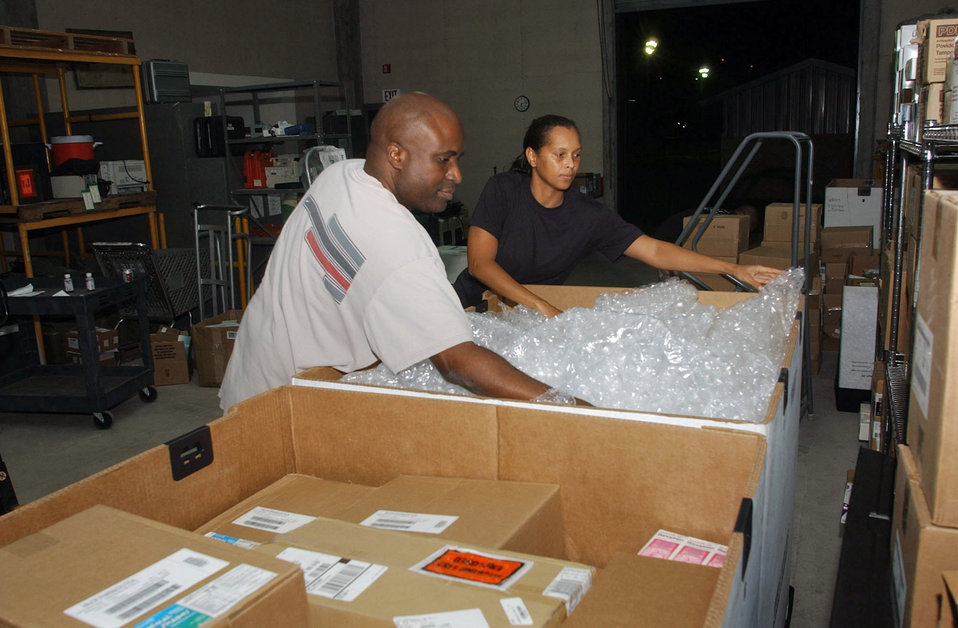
SOUTHCOM medics respond to Peru quake relief efforts

Master Sgt. Michael Freeman and Capt. Ebony Weston pack supplies Aug. 16 at Soto Cano Air Base, Honduras, for the mobile surgical team's deployment to Peru to assist with earthquake relief efforts. Sergeant Freeman and Captain Weston are part of the Soto Cano medical element.